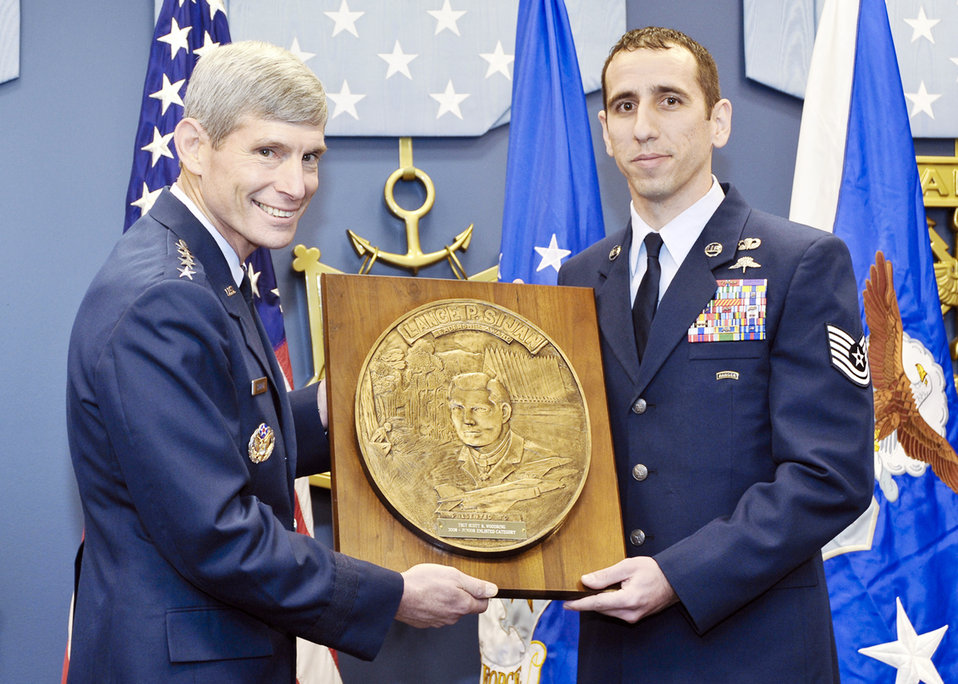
Sijan Award

Air Force Chief of Staff Gen. Norton Schwartz presents the Capt. Lance P Sijan Air Force Leadership Award to Tech. Sgt. Scott Woodring Nov. 18, 2009. The Sijan Award recognizes the accomplishments of officer and enlisted Airmen who have demonstrated the highest qualities of leadership in the performance of their duties and the conduct of their lives.